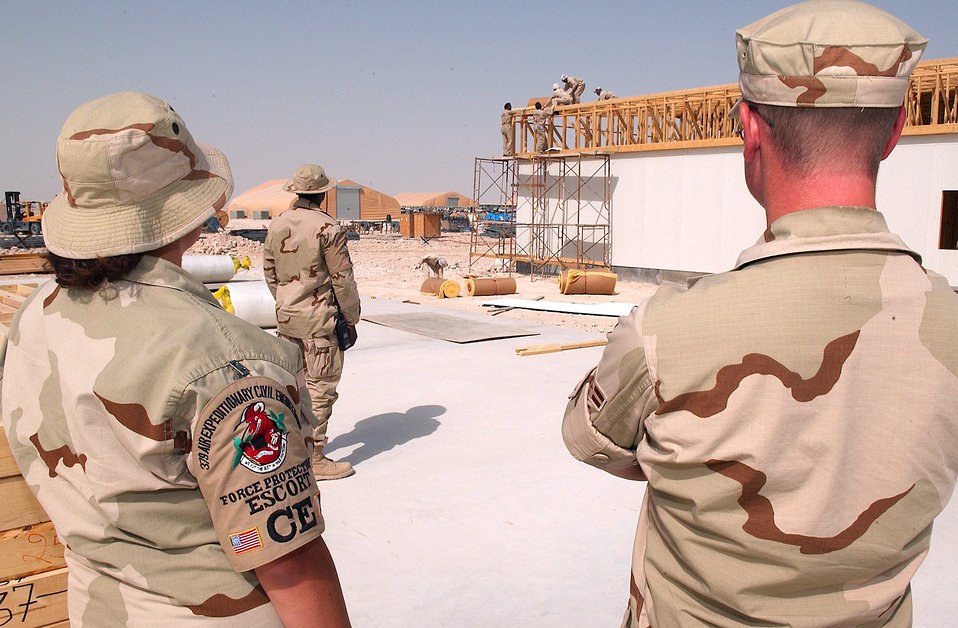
Escorts serve as base's second line of defense

SOUTHWEST ASIA -- Escorts assigned to the 379th Expeditionary Civil Engineer Squadron observe foreign workers at a base construction site.